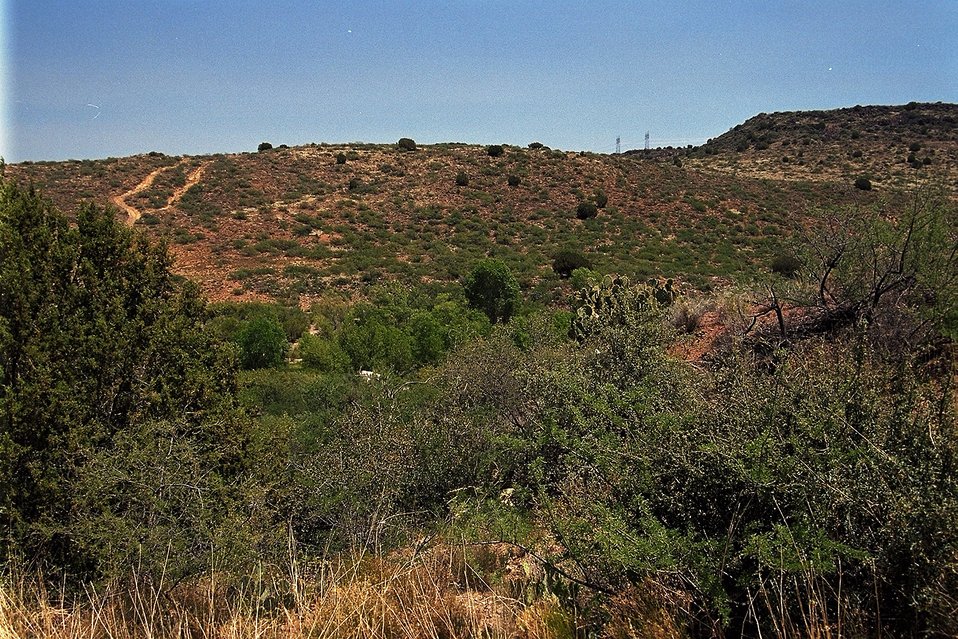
President Bill Clinton designated the Agua Fria National Monument in January of the year 2000.